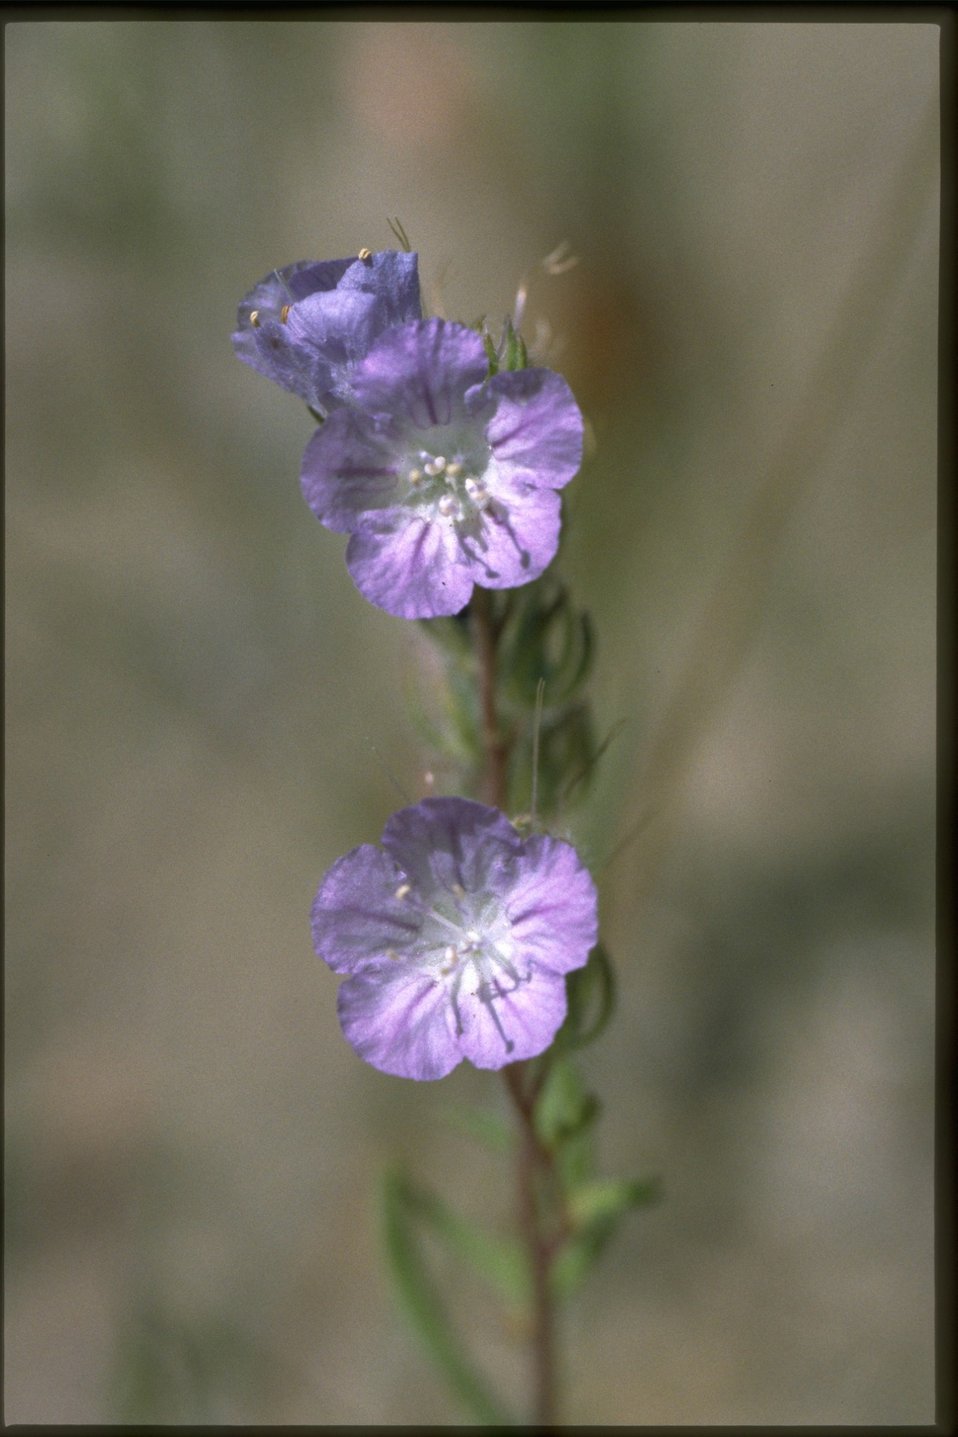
Closeup shot of Phocelia.